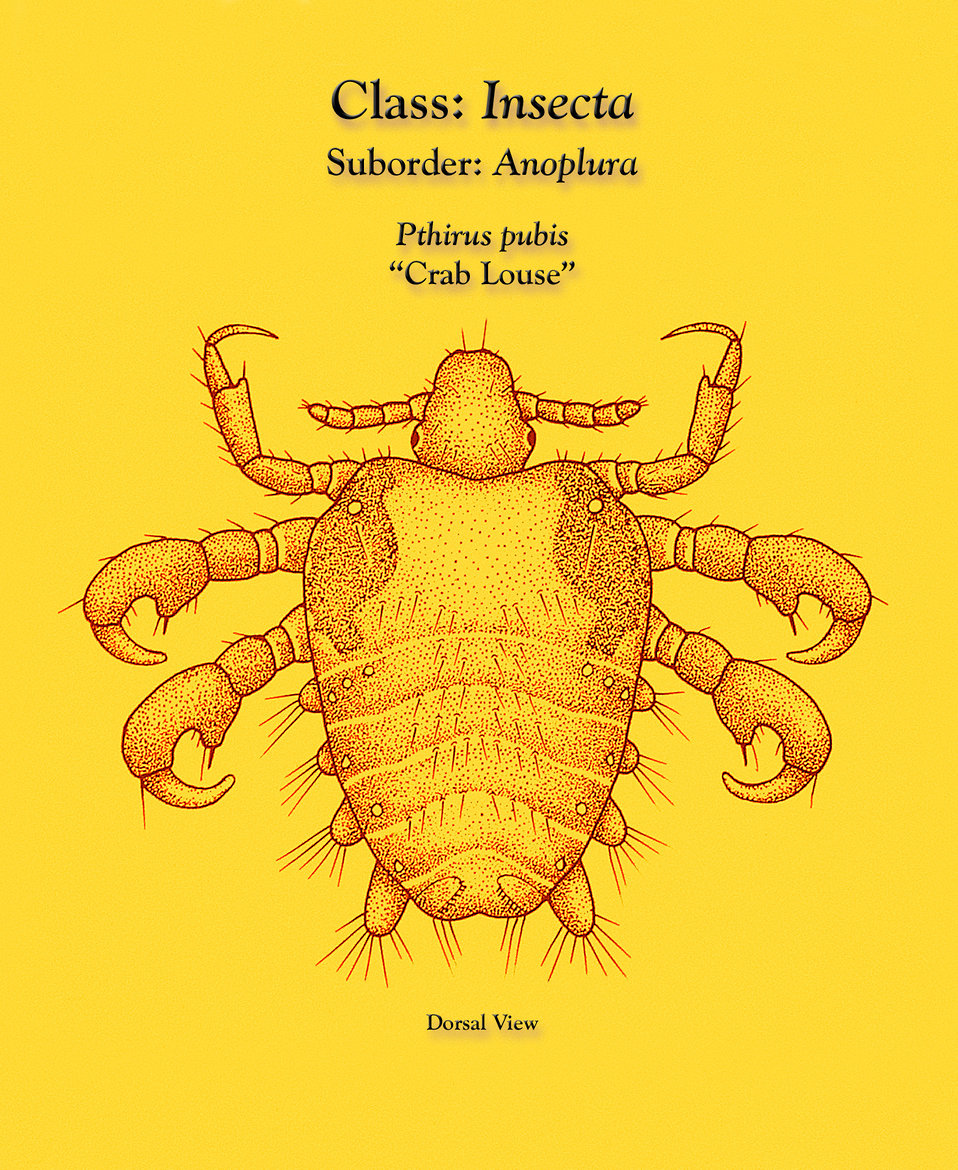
This illustration depicts a dorsal view of a 'crab louse', Pthirus pubis, a member of the suborder Anoplura, or 'sucking lice'.